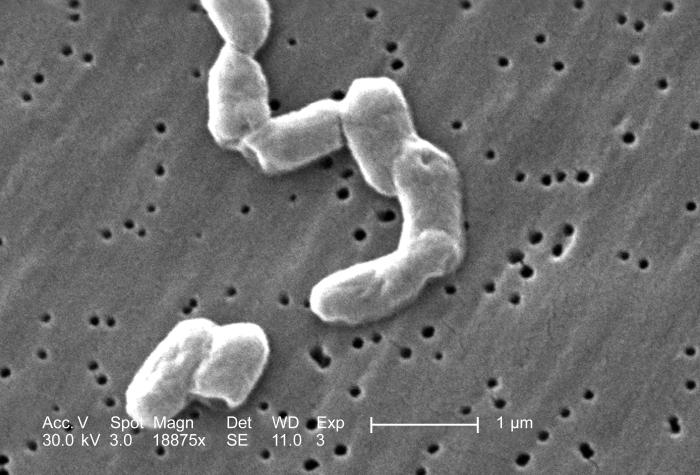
This scanning electron micrograph (SEM) depicts a number of highly magnified rod-shaped, motile, Gram-negative Salmonella infantis bacteria, some of which are attached; Magnification 18875x.